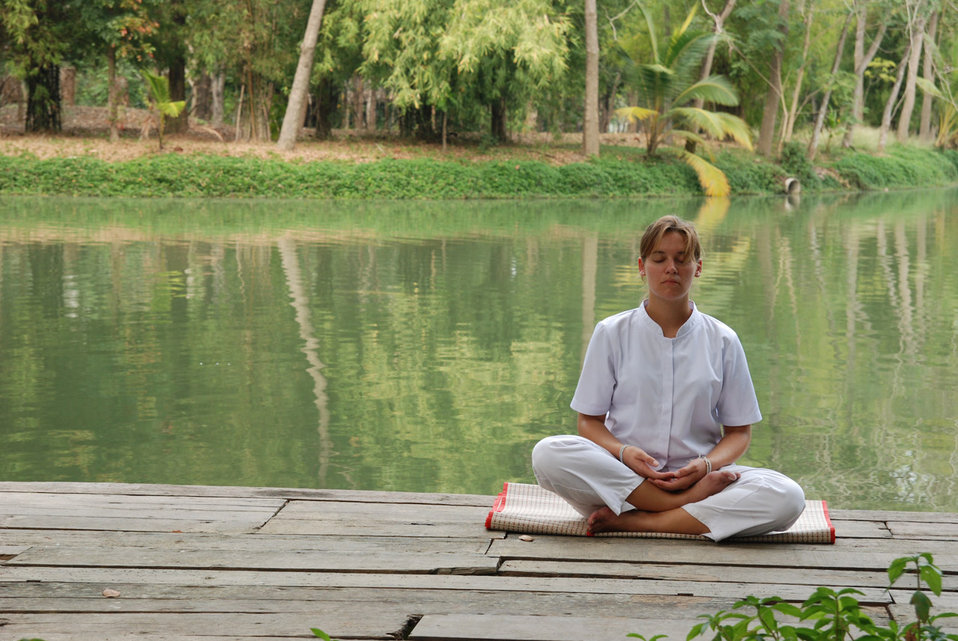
Meditation by the lake

A lady is meditating by the lake in one of the most beautiful monastery in thailand.